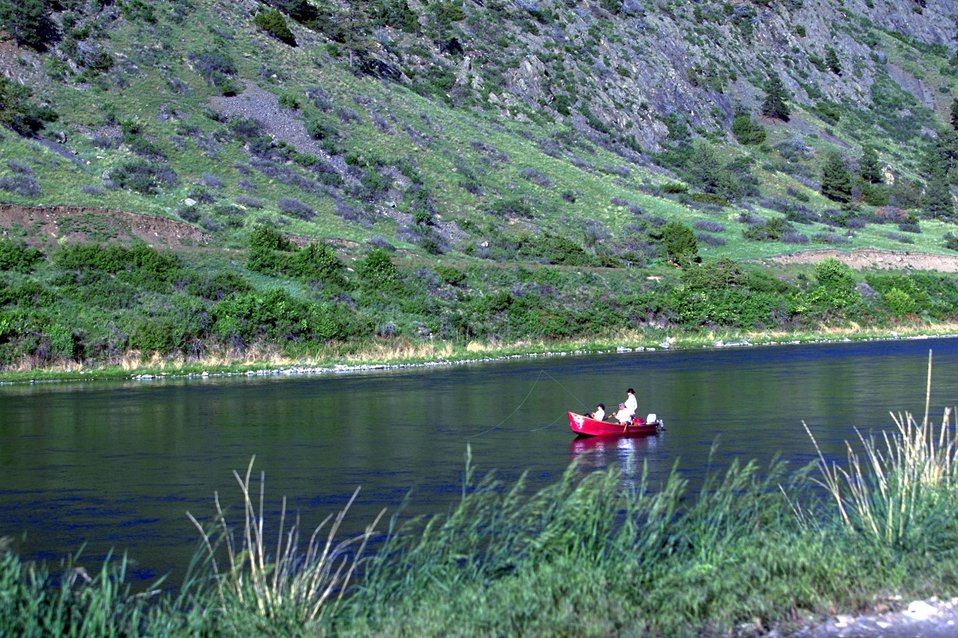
Fishing on the Missouri River